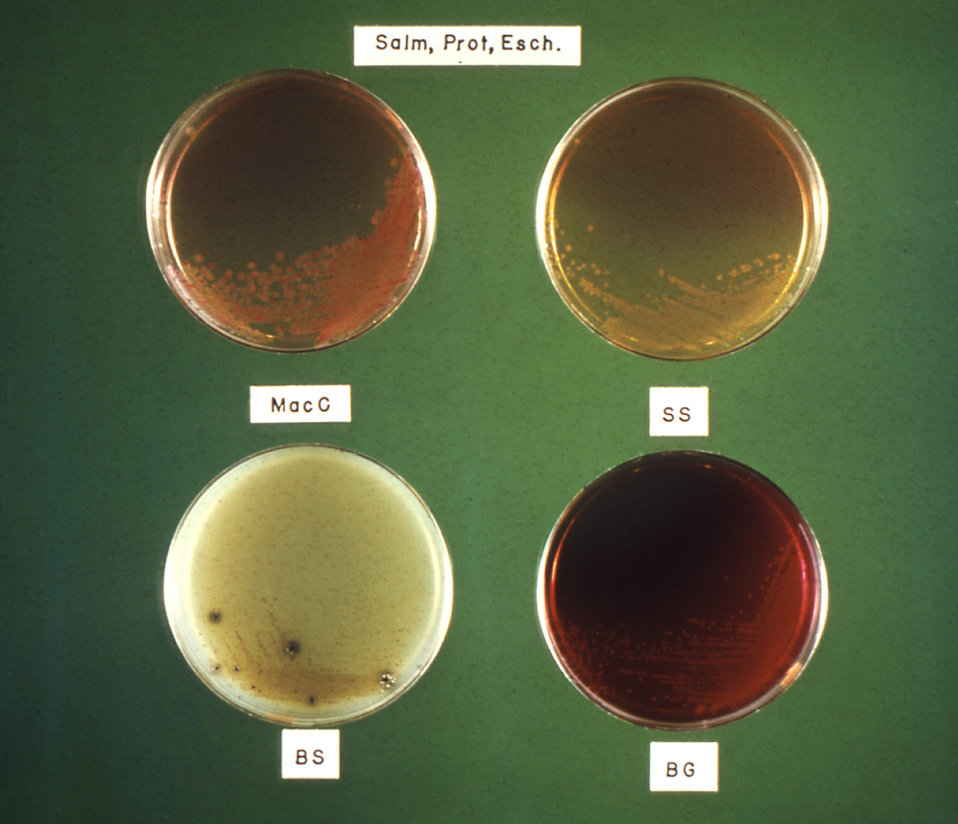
Here, S. typhi, E. coli, and Proteus sp. bacteria are cultured on four different culture media.